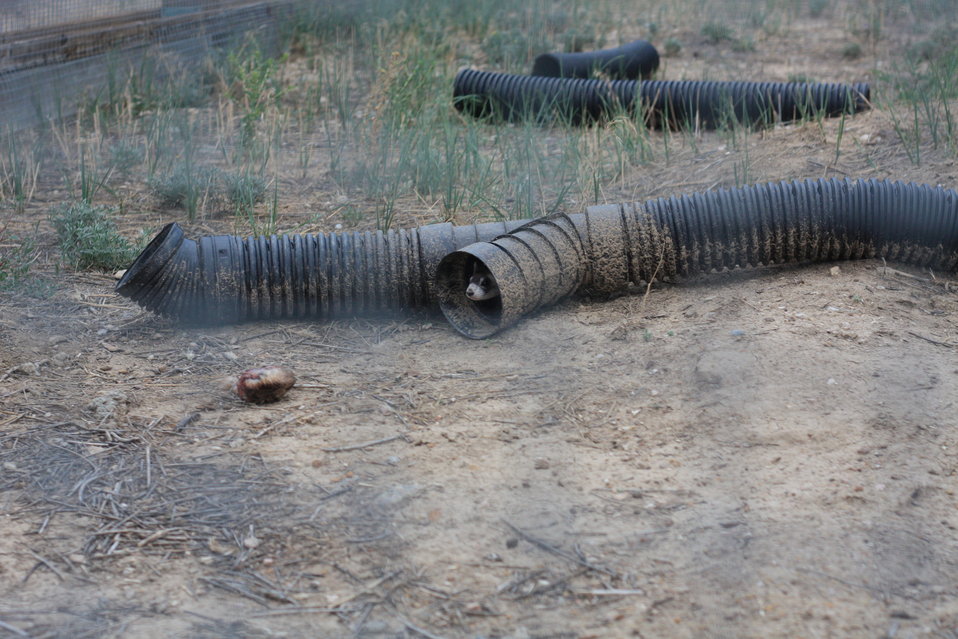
Interns visit the NBFFCC

In the summer of 2012, USFWS Region 6 interns visited the National Black-footed Ferret Conservation Center (NBFFCC) in Colorado to learn how the program reintroduces the endangered Black-footed ferret back into its native habitat.